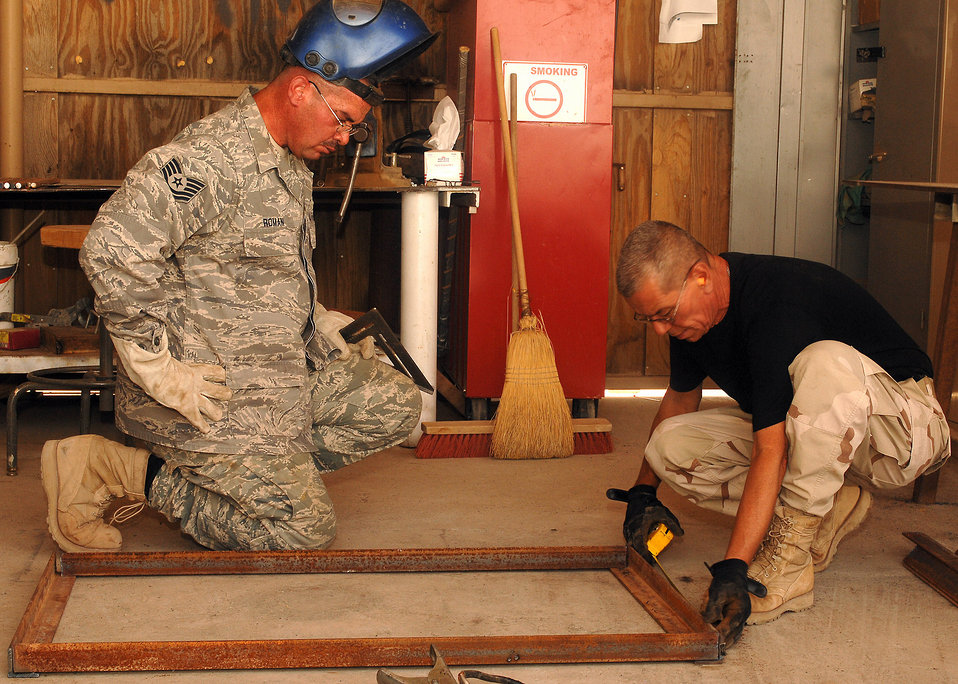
Working dog kennels receive massive renovation

Master Sgt. Victor Collazo (right) and Tech. Sgt. Anthony Roman align and measure pieces of metal before they are welded together on July 11 at a base in Southwest Asia. The 386th Expeditionary Civil Engineer Squadron is completing a project to increase the square footage of the K-9 kennels for the 386th Expeditionary Security Forces Squadron. The metal frames will be used to build new ramps for the dogs. Sergeant Collazo and Sergeant Roman are deployed from the 156th Airlift Wing, Muniz Air National Guard Base, Puerto Rico.